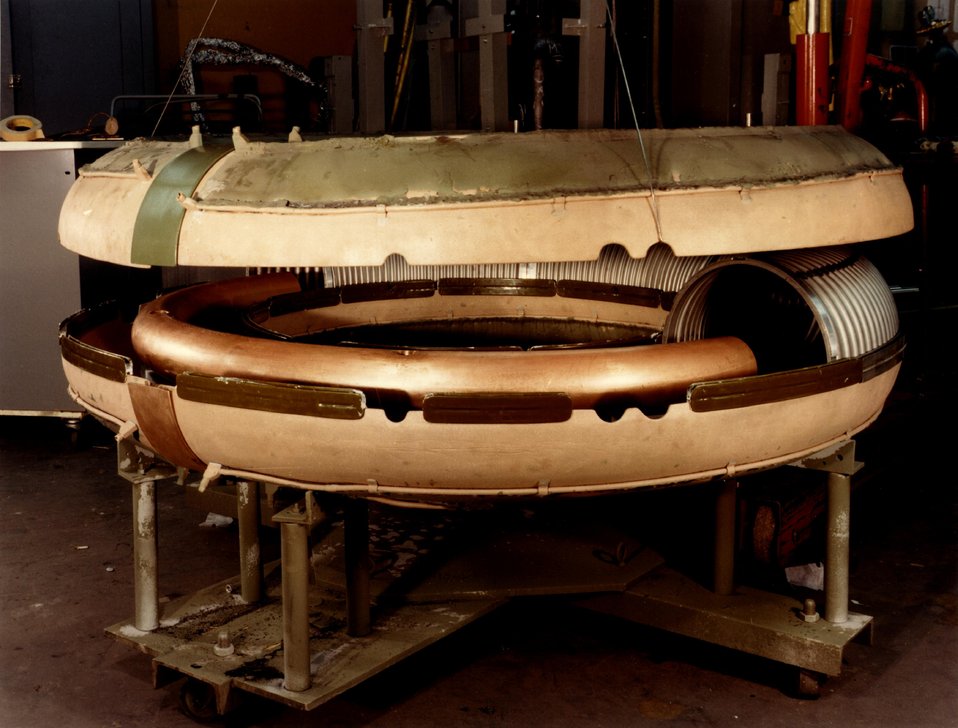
Sherwood Project- Cage Experiment Top.